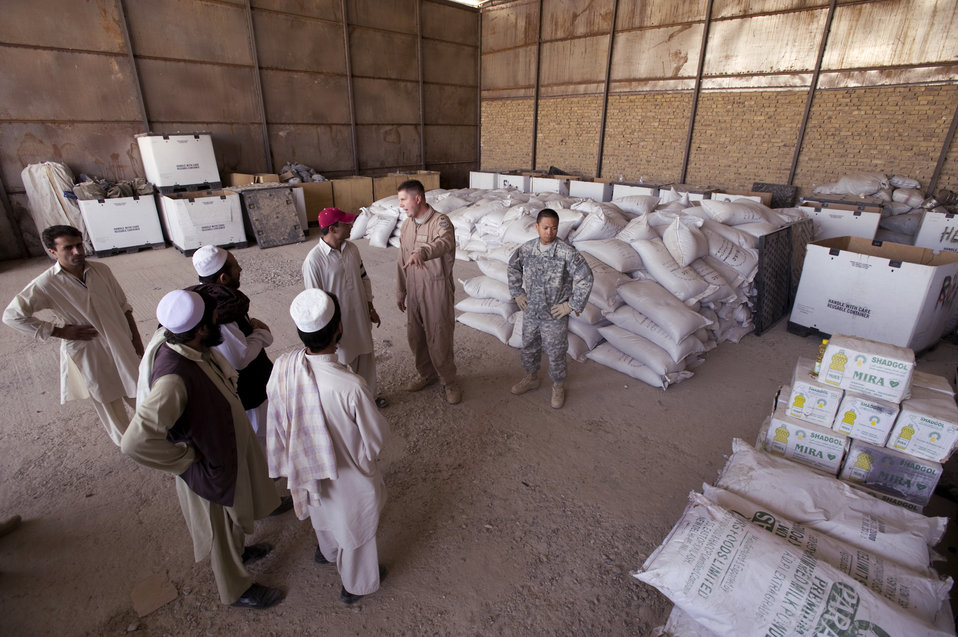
Servicemembers help malnourished Afghan children

Members of the Zabul Provincial Reconstruction Team medical staff discuss how to divide up ingredients with local medical professionals Oct. 14 from the Zabul province hospitals in Afghanistan. The food is vitamin enriched high calorie food supplements to combat malnutrition. The PRT staff is working with local heath officials to combat the main causes of the extremely high-infant mortality in the area such as unsanitary water supplies and malnutrition.